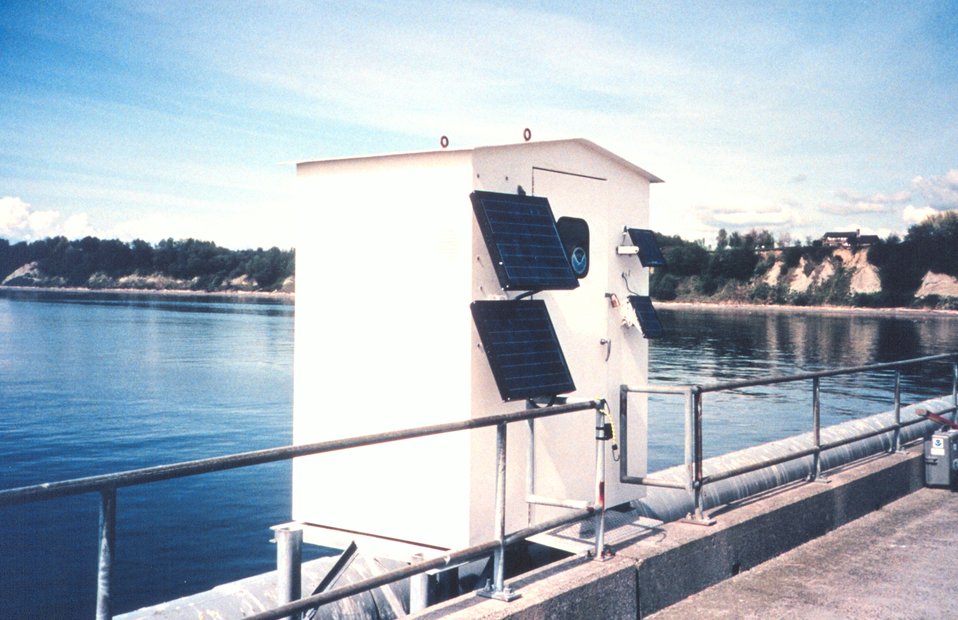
The tide house which houses an A.I.&NXG tide gage installation.